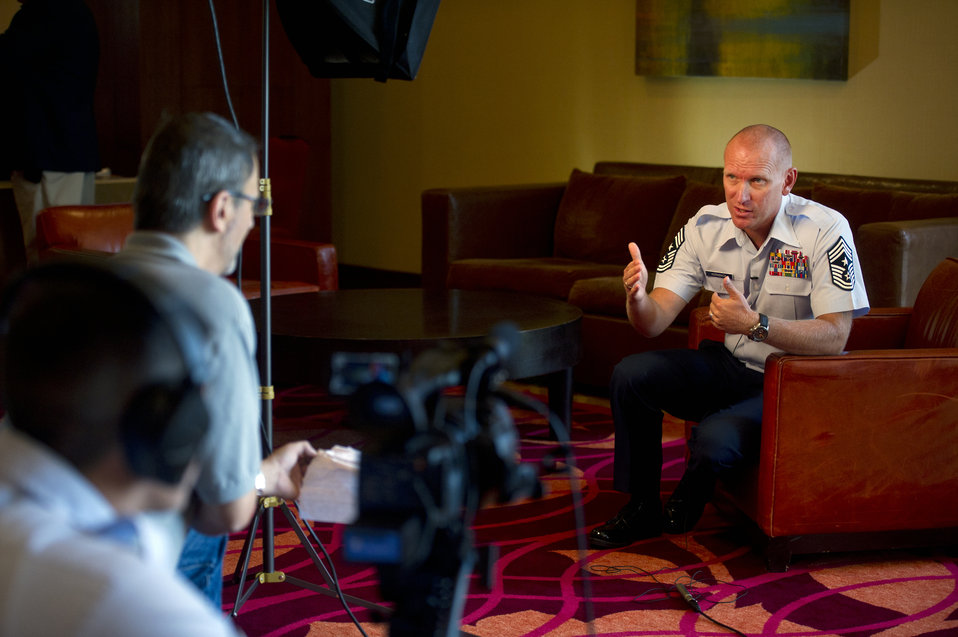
Air Force Global Strike Command

Chief Master Sgt. Brian S. Hornback, the command chief for Air Force Global Strike Command, answers a question during an interview with Steve Ninotta and Senior Airman Anthony Gamez, 3rd Combat Camera Squadron, July 26, 2011, during the Air Force Sergeants Association's Annual Professional Airmen's Conference in San Antonio.